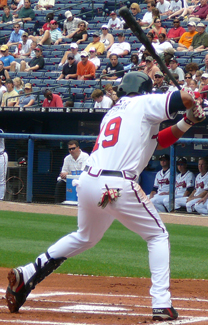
Picture I took of Yunel Escobar on 6-5-07
23:14, 7 June 2007 . . Chrisjnelson . . 208×325 (143,441 bytes)